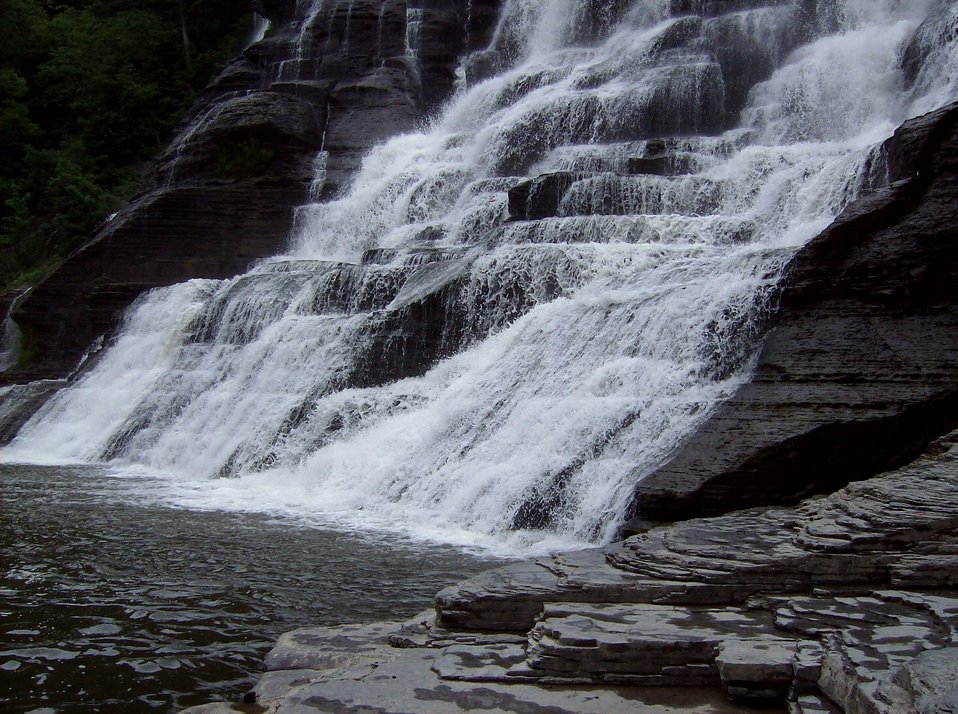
Bubbling, babbling waterfall dropping over shale formations which have eroded in stepping-stone fashion.